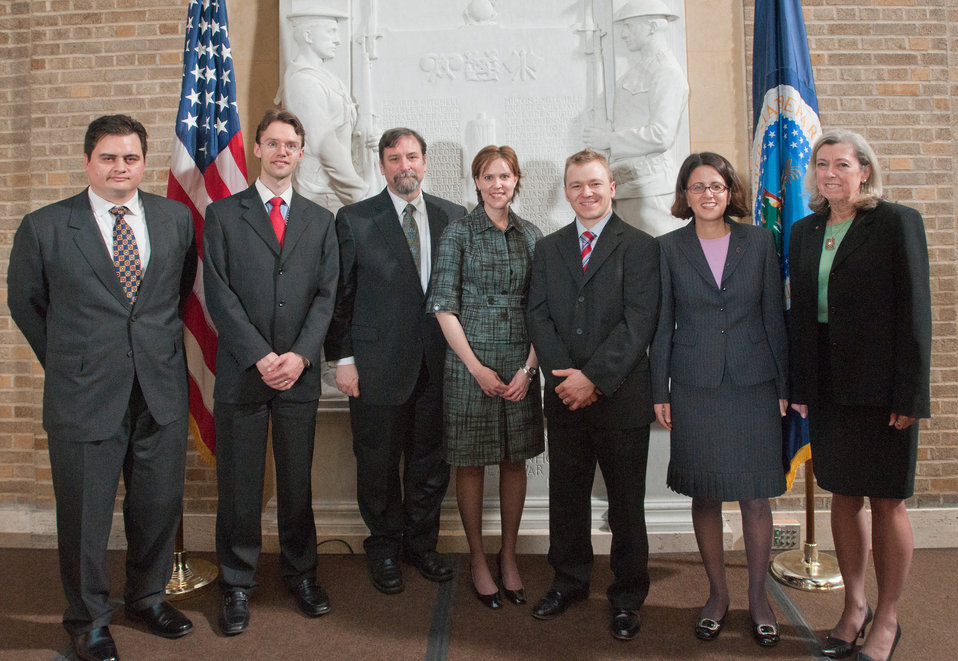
Foreign Agricultural Services leadership with new Foreign Service officers after being administered the Oath of Office at a ceremony at the U.S. Department of Agriculture in Washington, D.C., on March 15, 2012. From left-right, Anthony Gilbert, Andrew Anderson-Sprecher, Agriculture Office of Foreign Service Operations Deputy Administrator Jim Higgeston, Agriculture Deputy Under Secretary Farm and Foreign Agricultural Services Darci Vetter, Evan Mangino, Sigal Bernstein, and Agriculture Foreign Agriculture Service Acting Administrator Suzanne Heine.